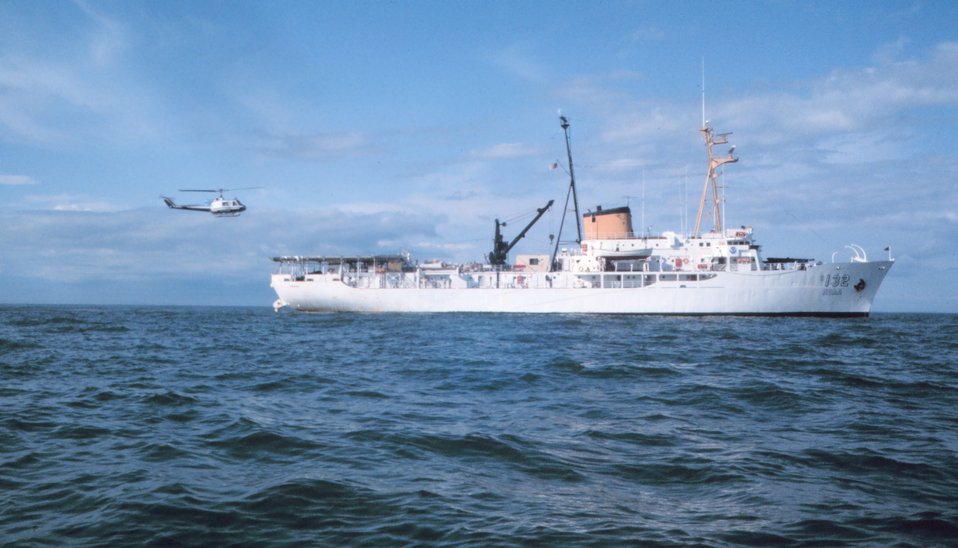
NOAA helicopter landing on helicopter pad of NOAA Ship SURVEYOR.